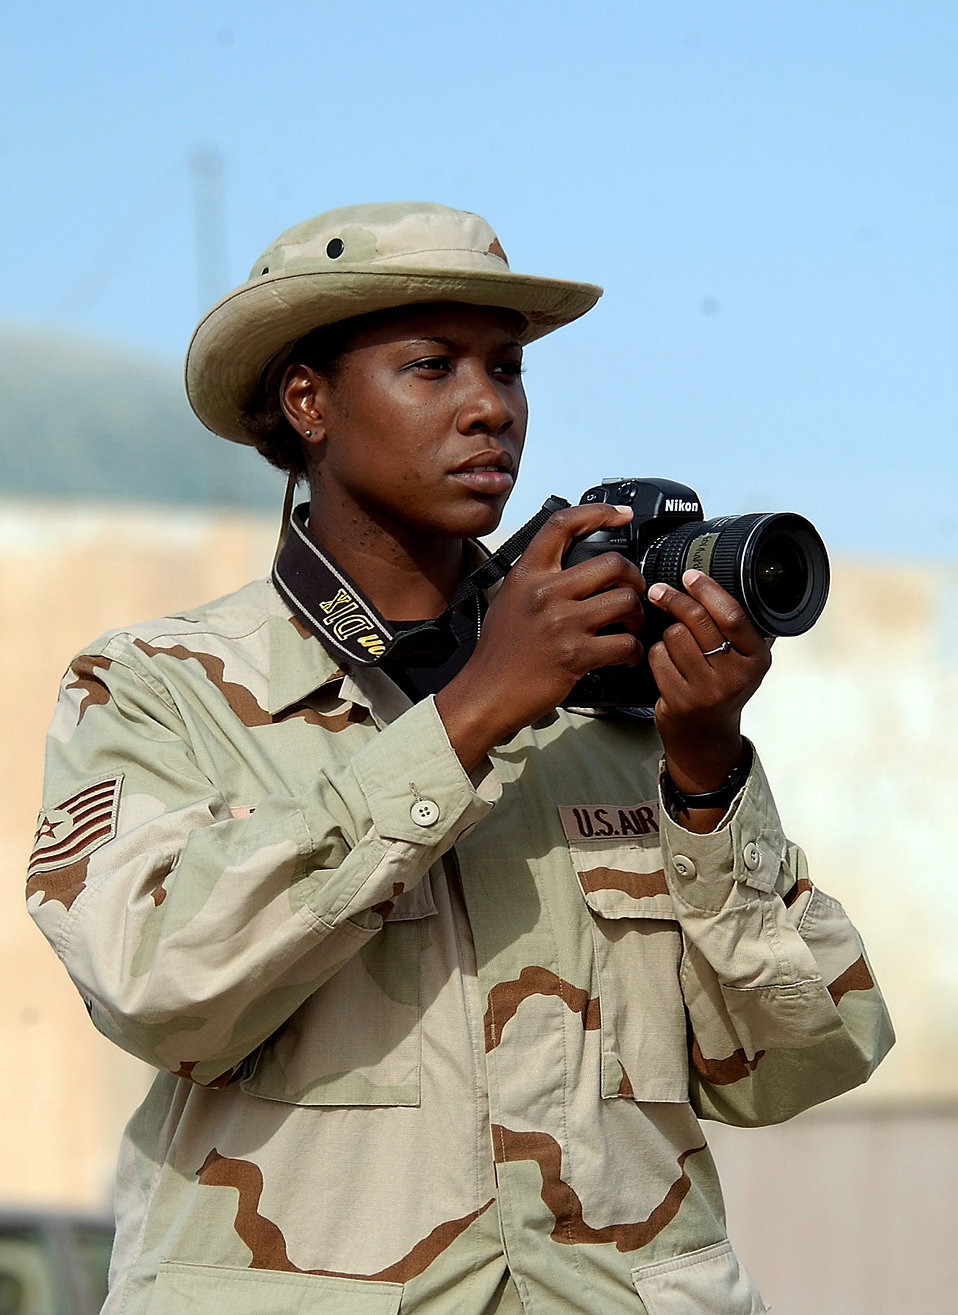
Documenting history

BAGHDAD, Iraq -- Tech. Sgt. Lisa Zunzanyika takes photographs of the sites and people here. Photographers have taken more than 5,000 photos since arriving here in late October. More than 239 of those images have been sent to the Joint Combat Camera Center at the Pentagon, where they are made available to the public. Zunzanyika is a photographer with the 447th Expeditionary Communications Squadron.